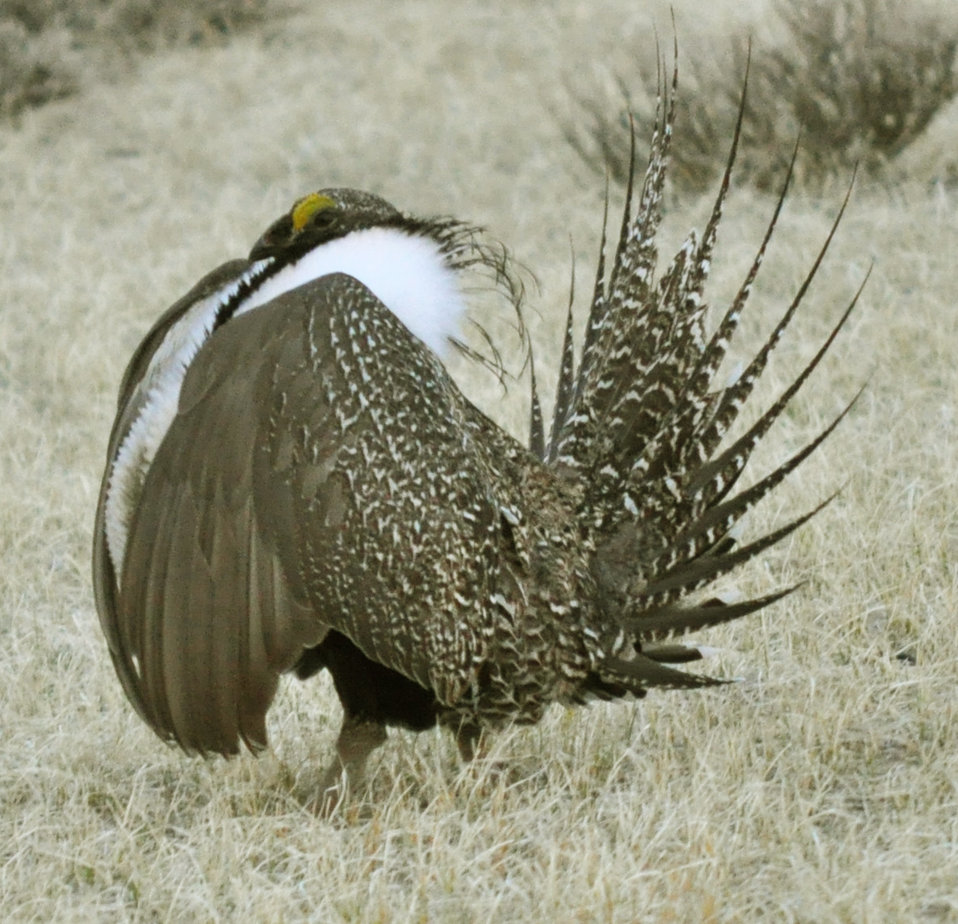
Male greater sage-grouse struts to attract females at a lek (breeding or dancing ground) near Bodie, California in April.